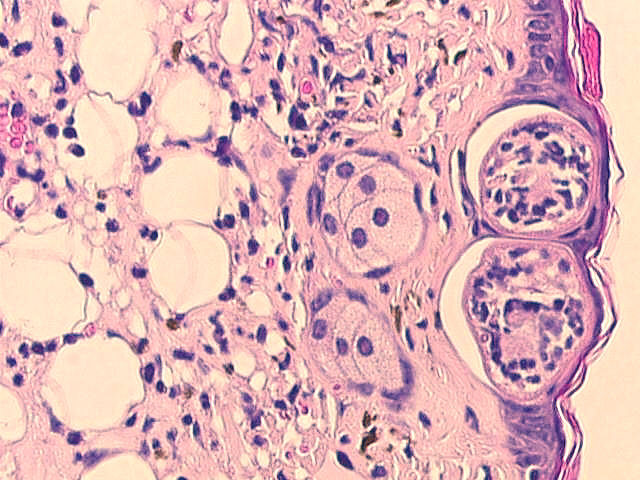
Two schistosomula in abdominal skin of a vaccinated mouse.